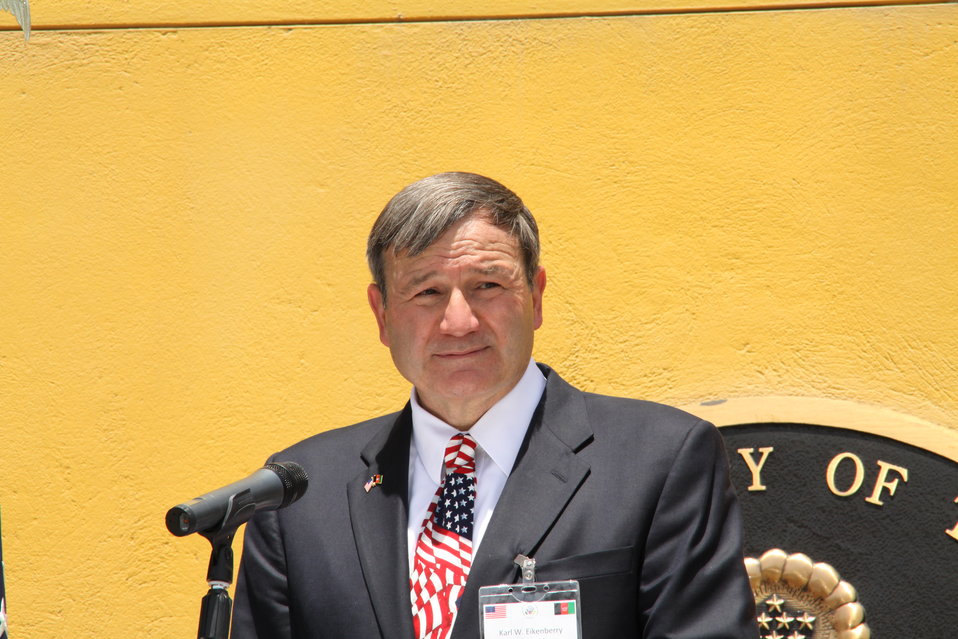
Kabul Official July 4th Celebration